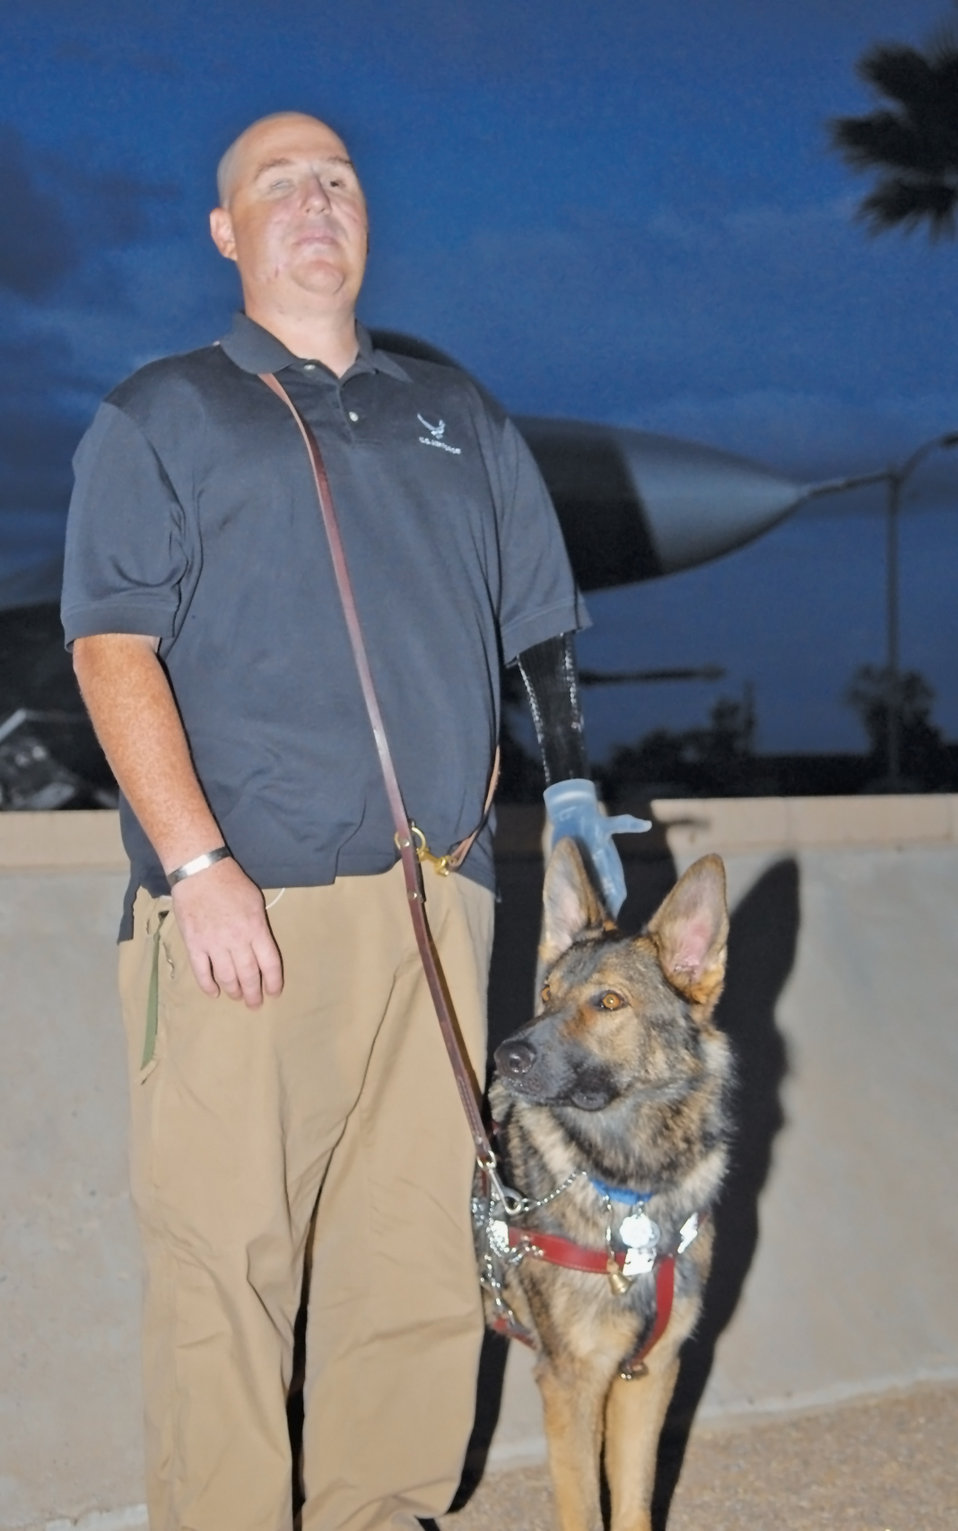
Slaydon PB

Retired Tech. Sgt. Matt Slaydon stands with his guide dog, Legend. Sergeant Slaydon teamed with Legend three years after he lost his sight and left arm in an improvised explosive device explosion in October, 2007, in Kirkuk Iraq.